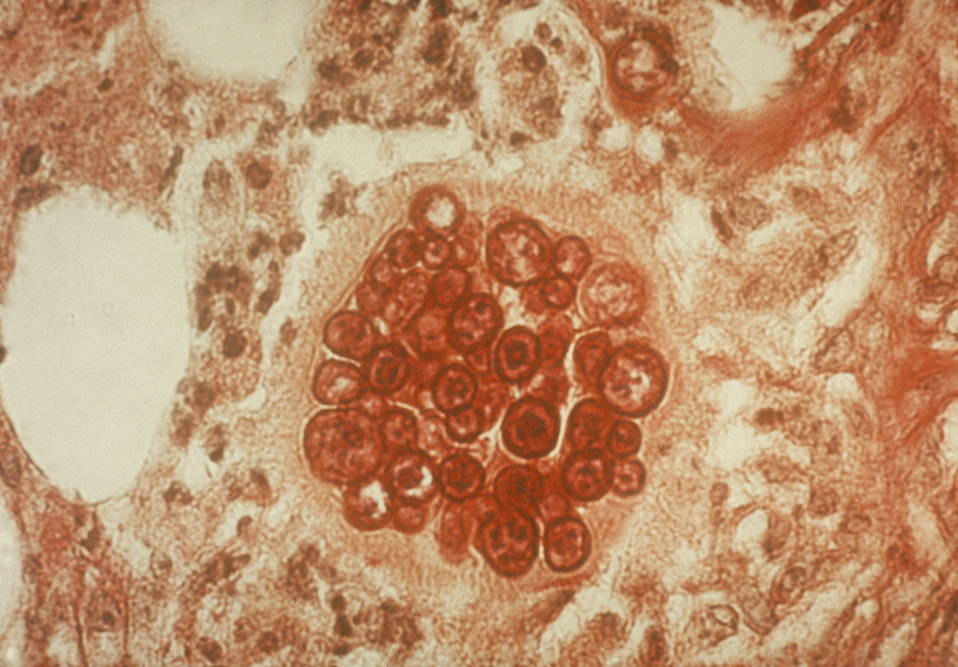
Histopathology of coccidioidomycosis. Spherule with endospores of Coccidioides immitis. PAS stain.